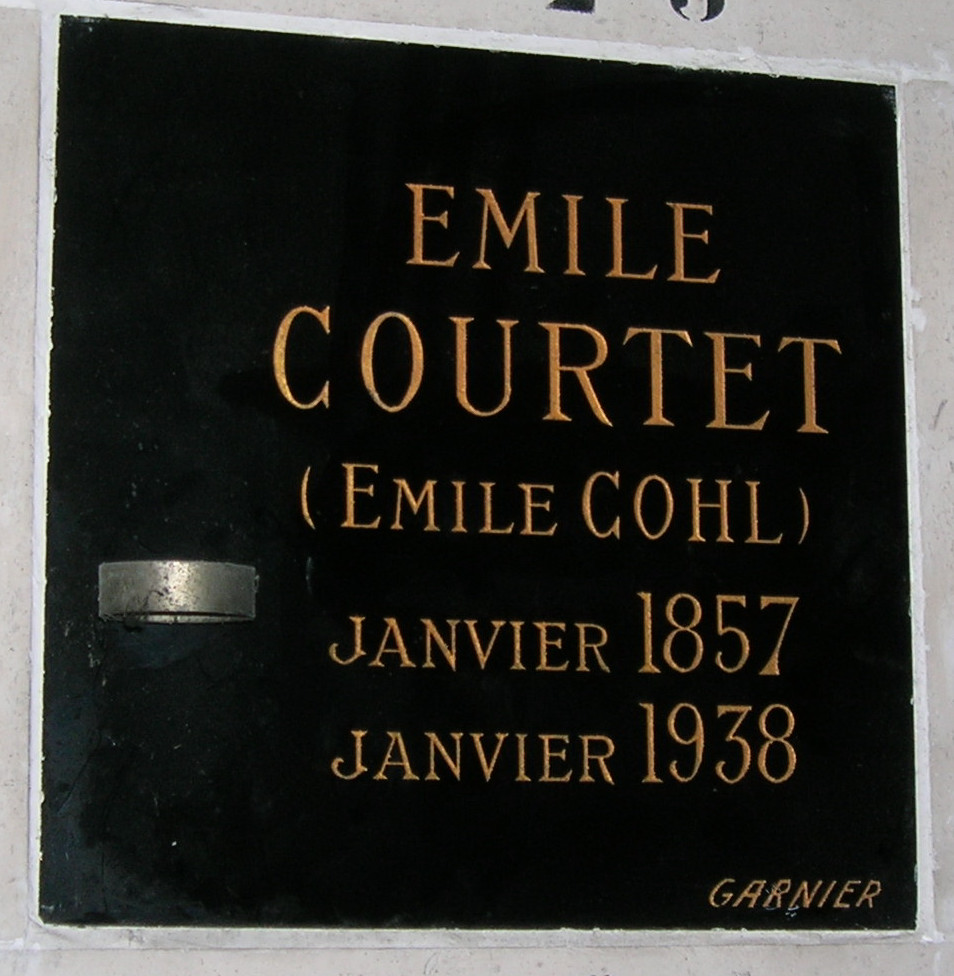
Urn-grave with commemorative plaque of √âmile Cohl in the columbarium of the P√®re-Lachaise Cemetery (Paris, France) Fran√ßais†: Niche fun√©raire avec plaque comm√©morative d'√âmile Cohl dans le columbarium du Cimeti√®re du P√®re-Lachaise (Paris, France)